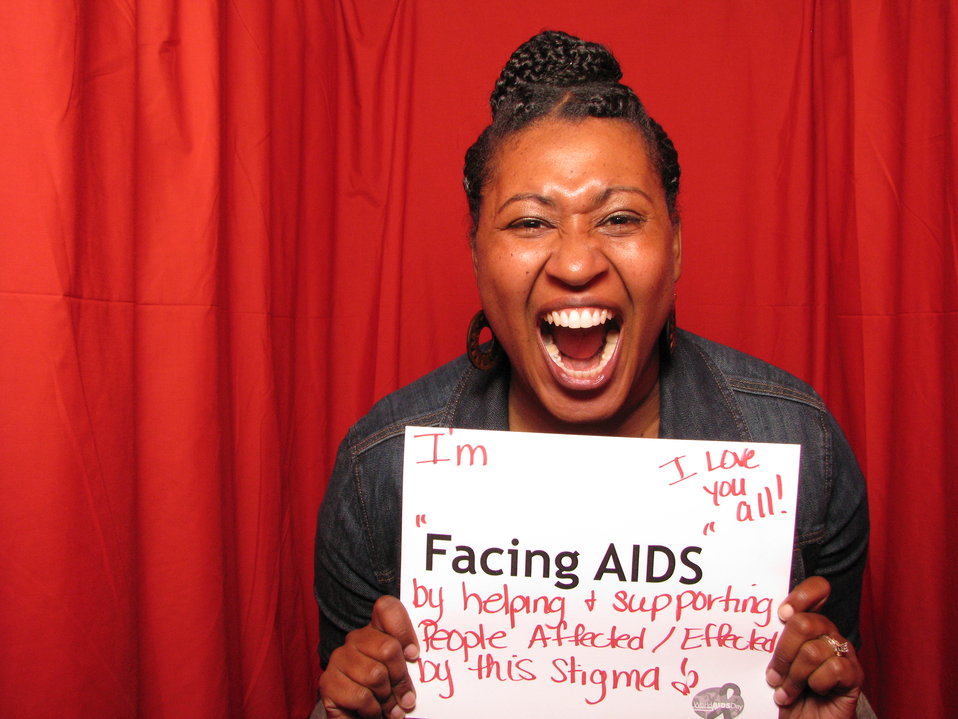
I'm 'FACING AIDS' by helping and supporting people affected/effected by this stigma! I love you all!

From the AIDS.gov photo booth at the U.S. Conference on AIDS, September 2010 (Orlando, FL).